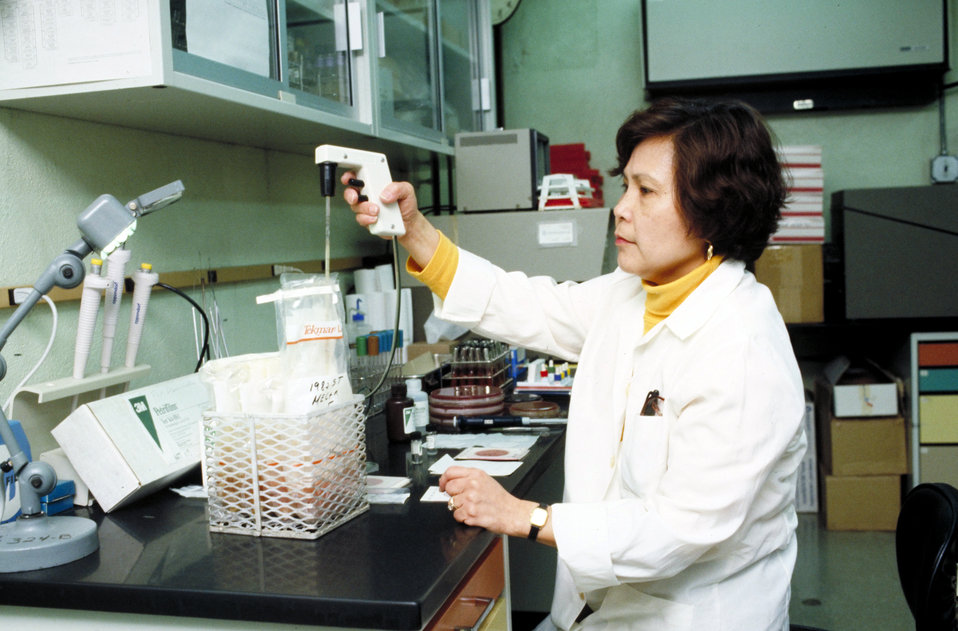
U.S. Department of Agriculture’s (USDA) Food Safety Inspection Service (FSIS) scientist conducts microbiological tests for the presence of specific pathogenic microorganisms in or on the product on March 15, 1993.